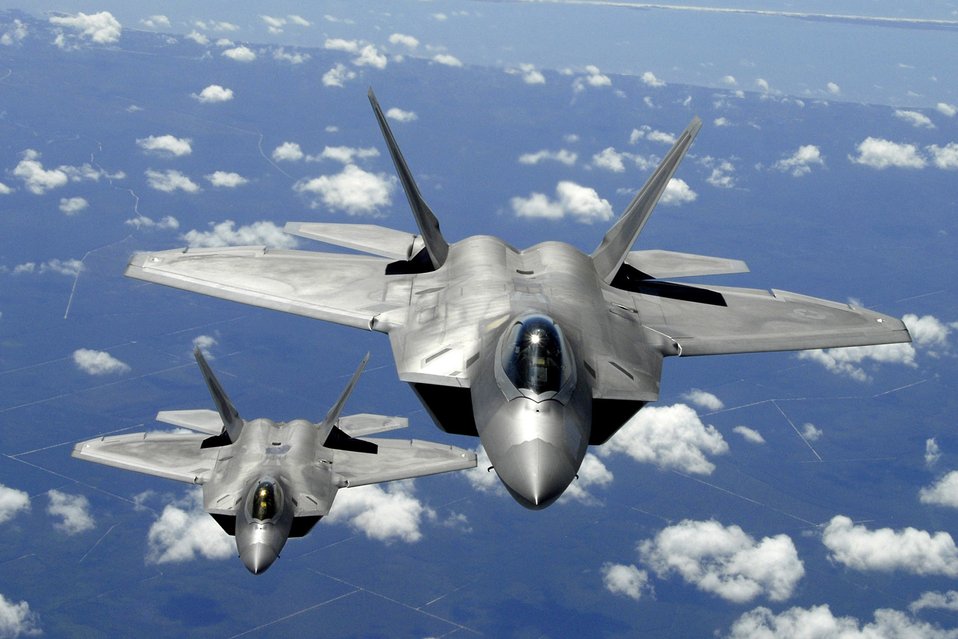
Raptors on the prowl

Two F-22 Raptors from Tyndall Air Force Base, Fla., participate in a recent training exercise.